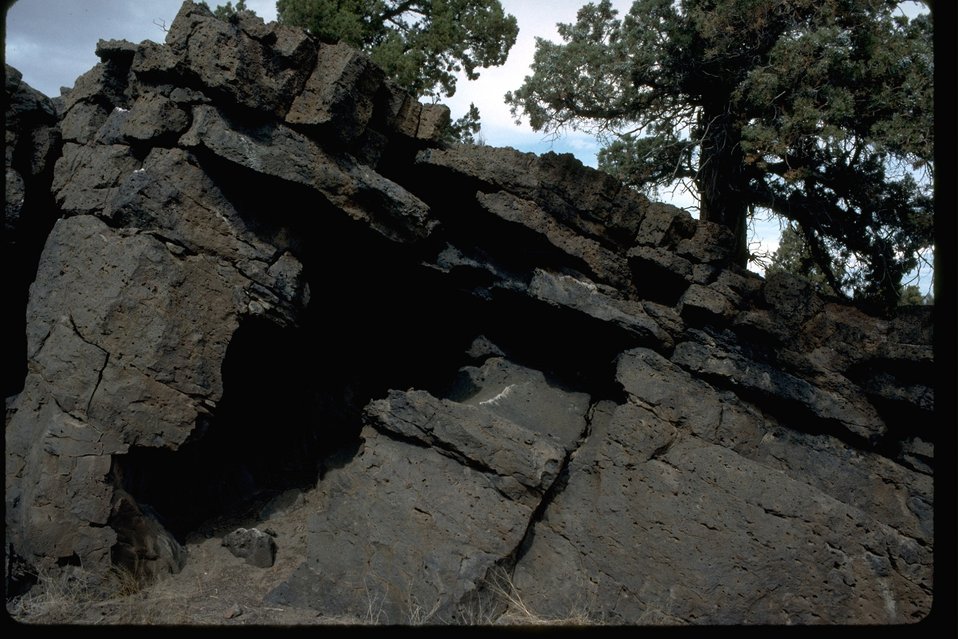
The lava beds in the Badlands Wilderness Study Area. OR 5-21